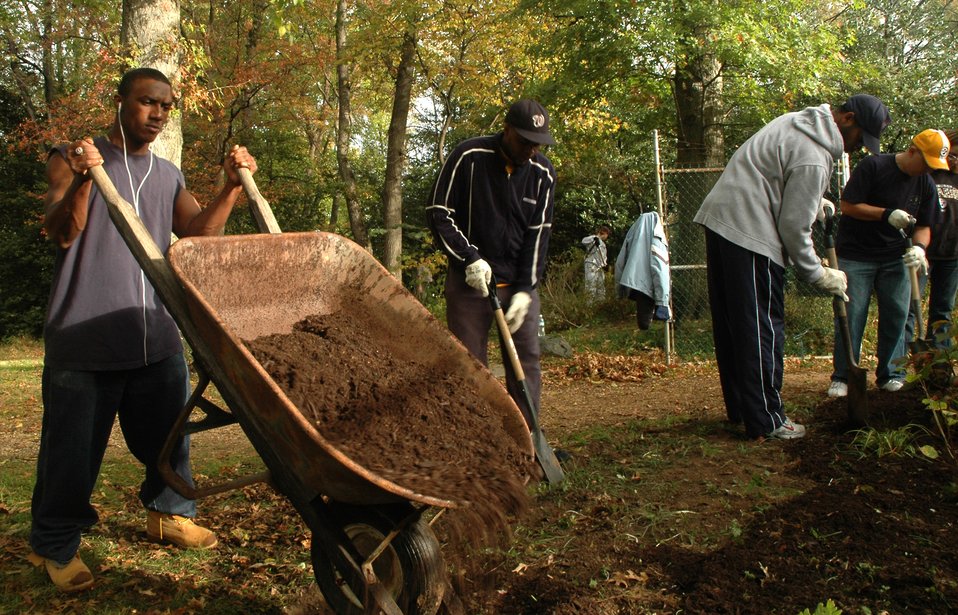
Servicemembers make a difference

Airman 1st Class Jo Van J. Descartes, 11th Security Forces Squadron, pours mulch into a flowerbed Oct. 25 at Kenilworth Aquatic Garden in Washington, D.C. Airman Descartes was one of 176 servicemembers who volunteered at the garden as part of a joint service project for national